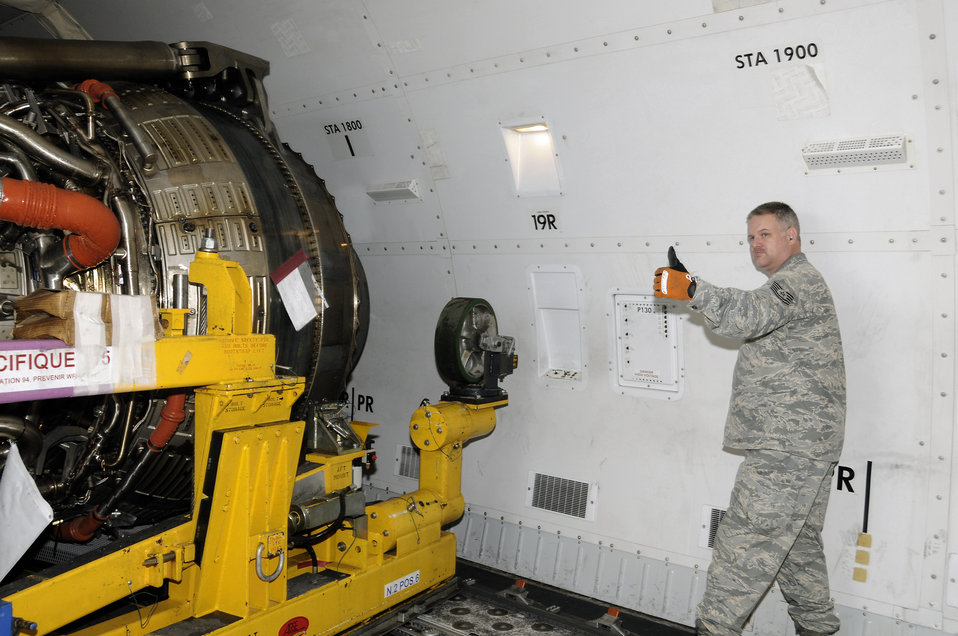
Lajes Field Airmen help disabled French aircraft

Technical Sgt. John Christian gives a thumbs up while loading a defective engine on an Air France 747 cargo plane Jan. 13 at Lajes Field, Azores. Base members assisted the Portuguese and Air France officials in unloading a new engine for an Air France 777 passenger aircraft that made an emergency landing here Jan. 4. Sergeant Christian is assigned to the 729th Air Mobility Squadron.